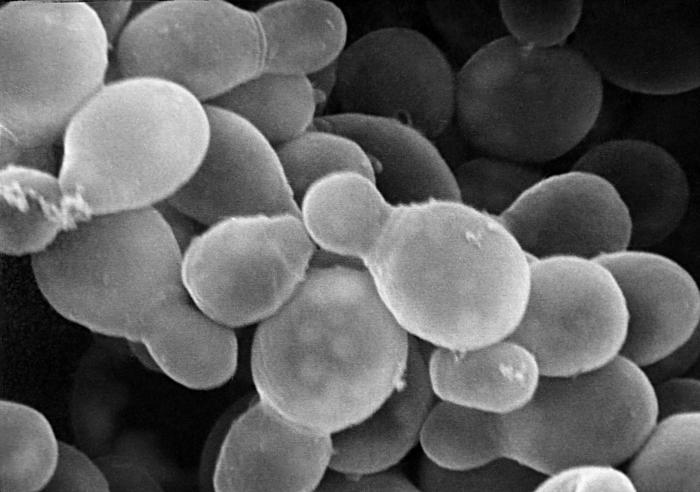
Scanning electron micrograph (SEM) of Malassezia furfur.